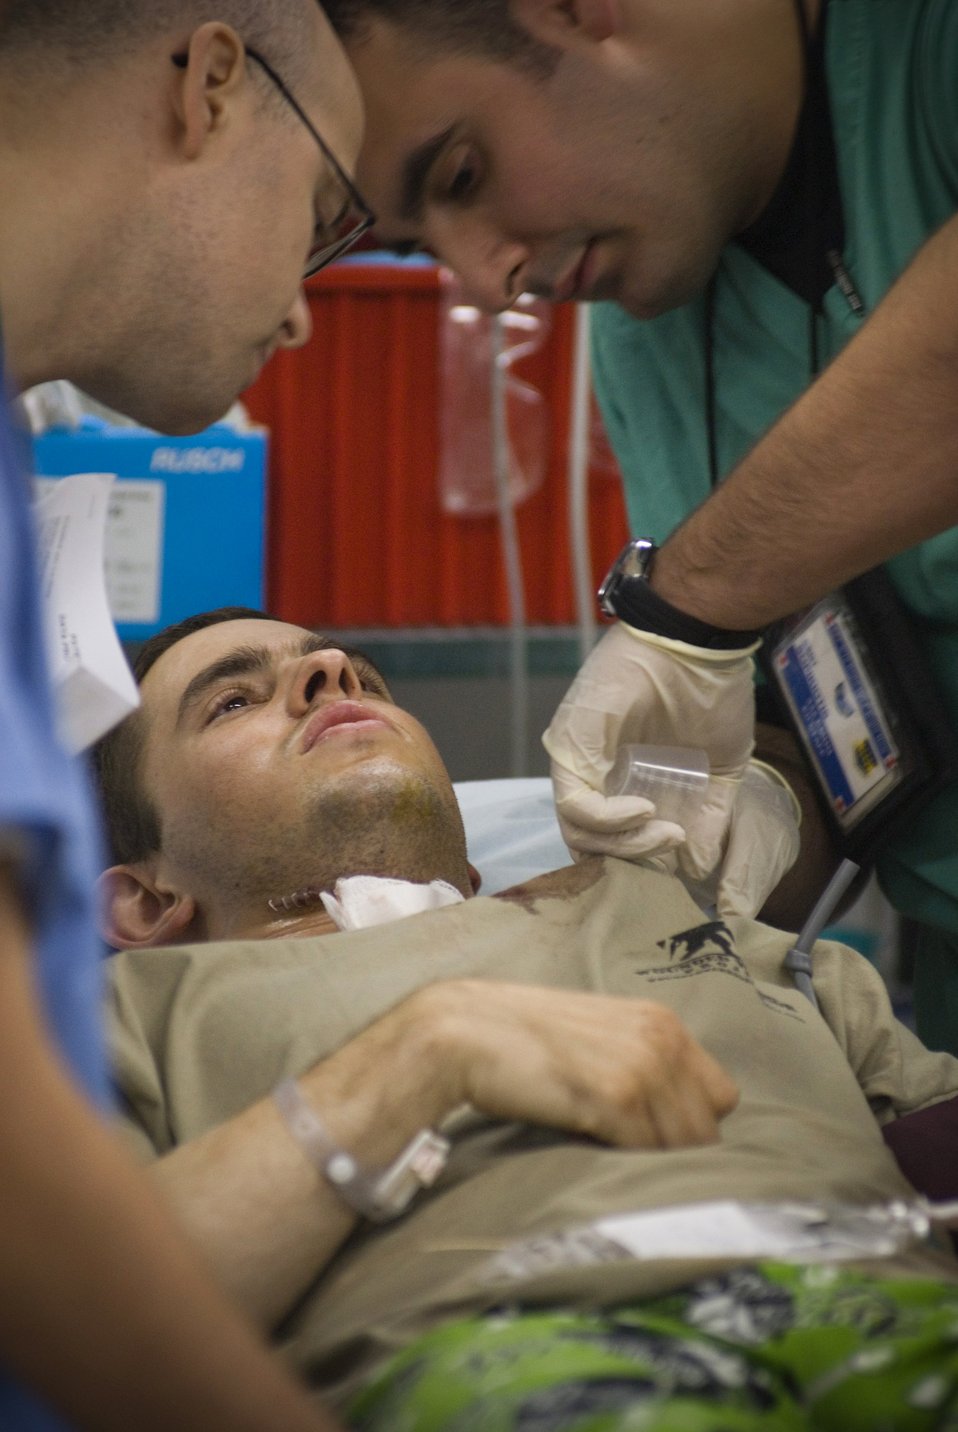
Airman survives 'million-dollar' wound

Airman 1st Class Michael Brady is assessed by doctors upon arrival Oct. 14 at the Air Force Theater Hospital at Balad Air Base, Iraq. Airman Brady was augmenting the Army in a